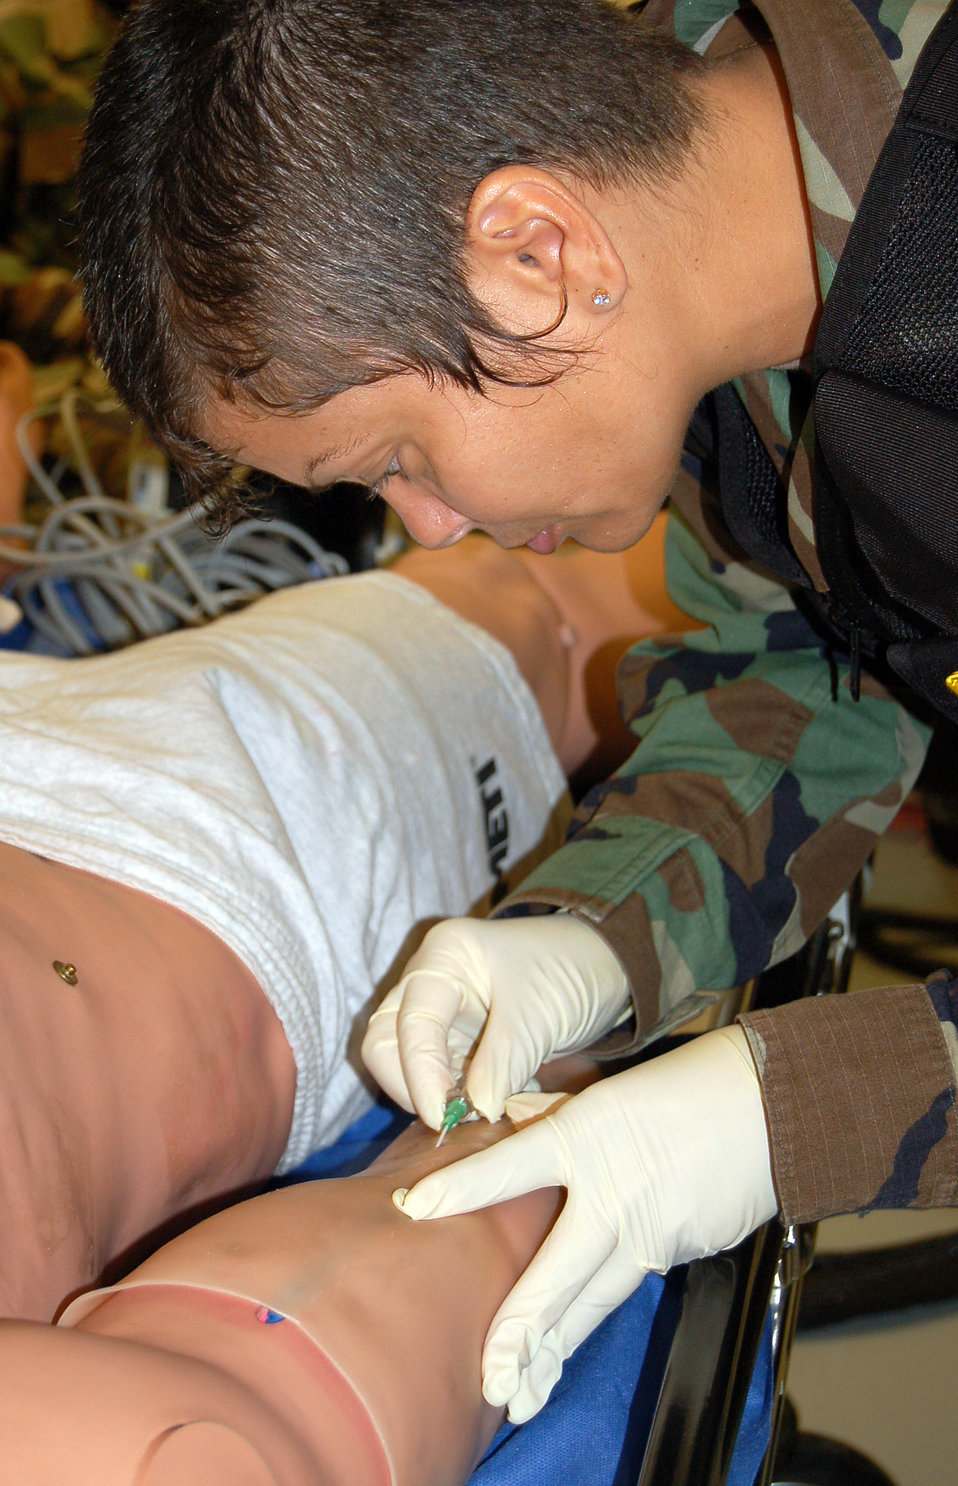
Mannequins help improve casualty care

Staff Sgt. Suellen Carire inserts a needle into the arm of her unique patient, a computerized mannequin, during a new Air Force Special Operations Command casualty evacuation course on Thursday, May 18, 2006. The realistic training is geared to better prepare medics for the chaos of combat operations. Sergeant Carire is from the 920th Rescue Wing, Patrick Air Force Base, Fla., and was among the first students to attend the new course.